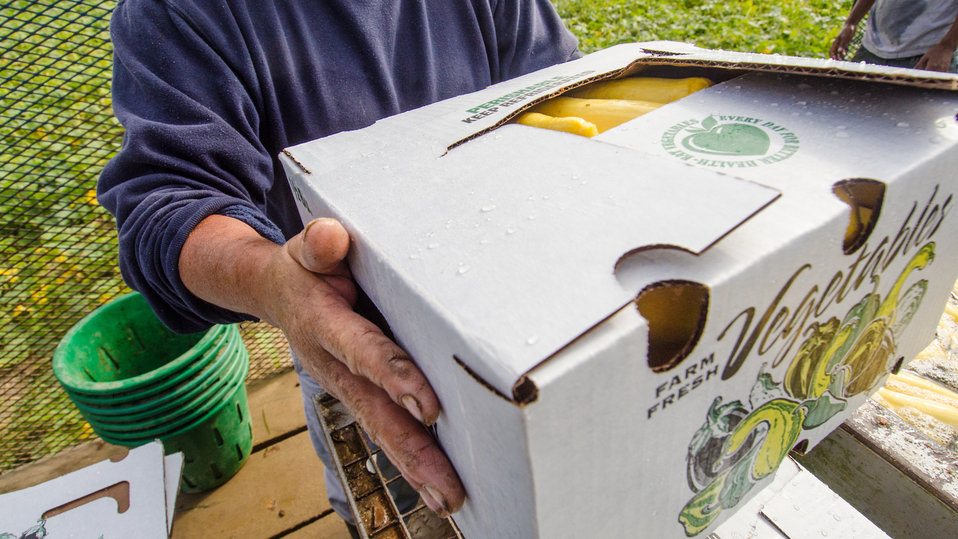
Migrant workers rinse and pack just-picked yellow squash on a processing trailer at Kirby Farms in Mechanicsville, VA on Sep. 20, 2013. Kirby Farms is a third-generation family farm that covers 500 acres, and generates produce and grains on a year-around operation.